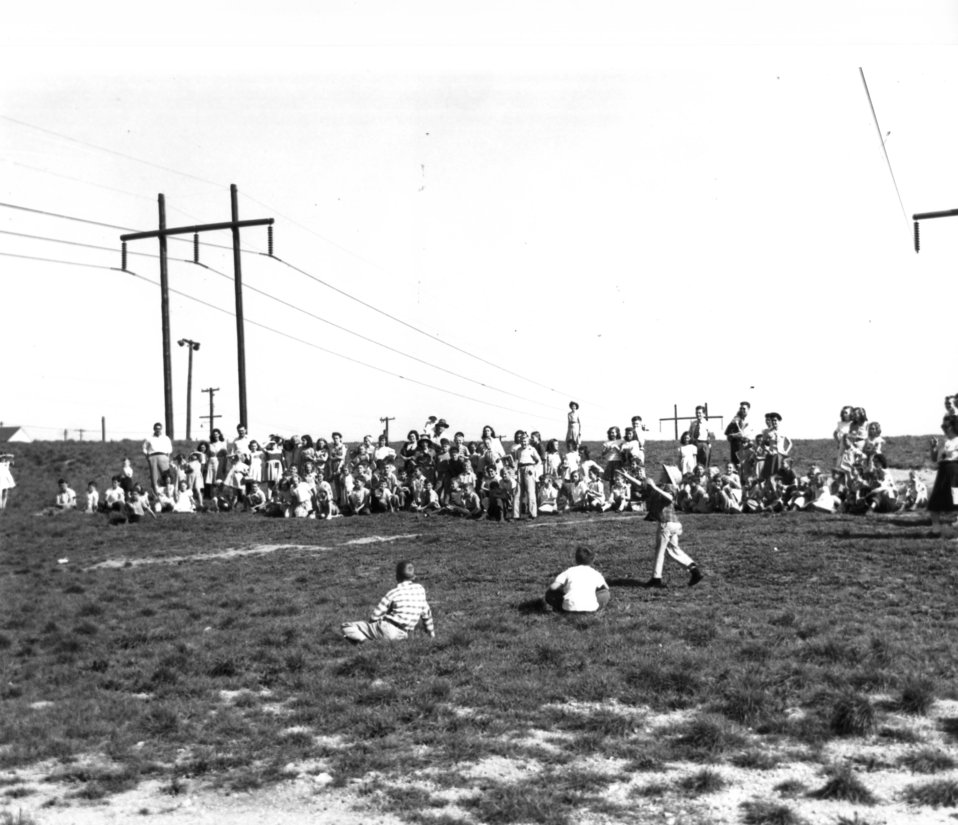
Recreation at Oak Ridge